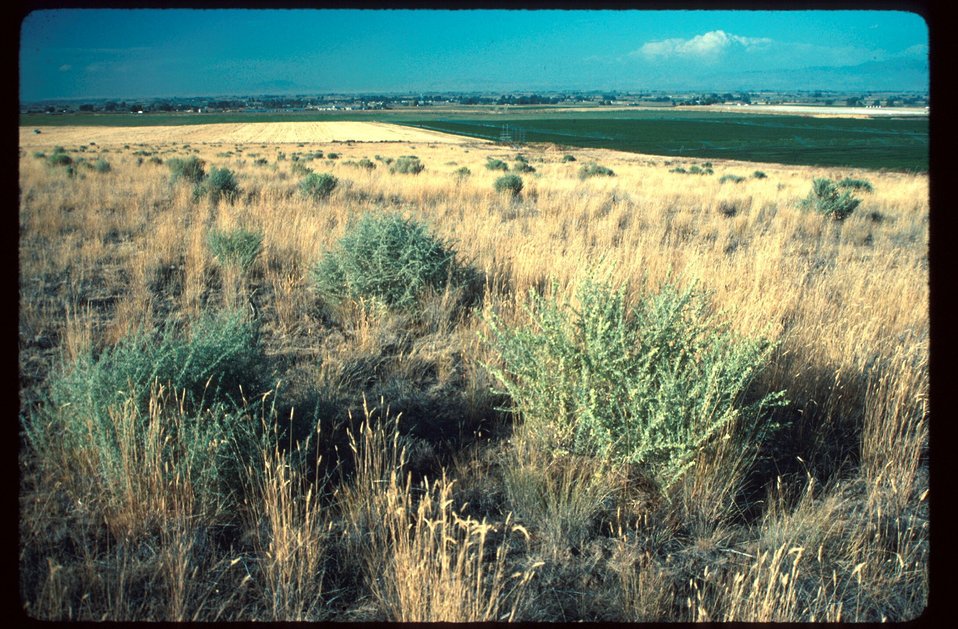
Kuna Crested Wheatgrass Range Restoration Project